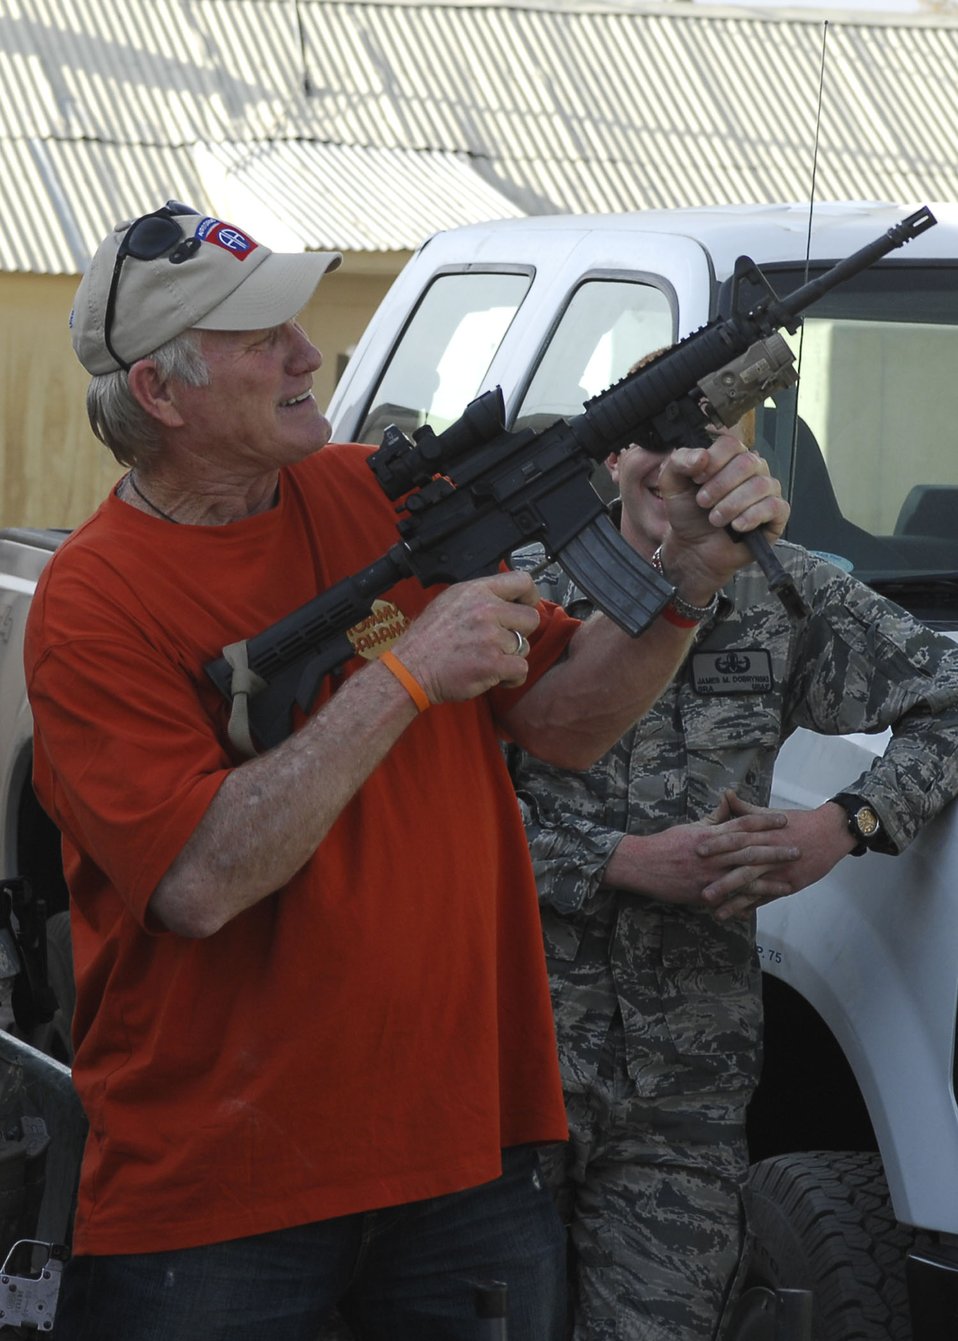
'Fox NFL Sunday' team visits Bagram

Terry Bradshaw, a member of the